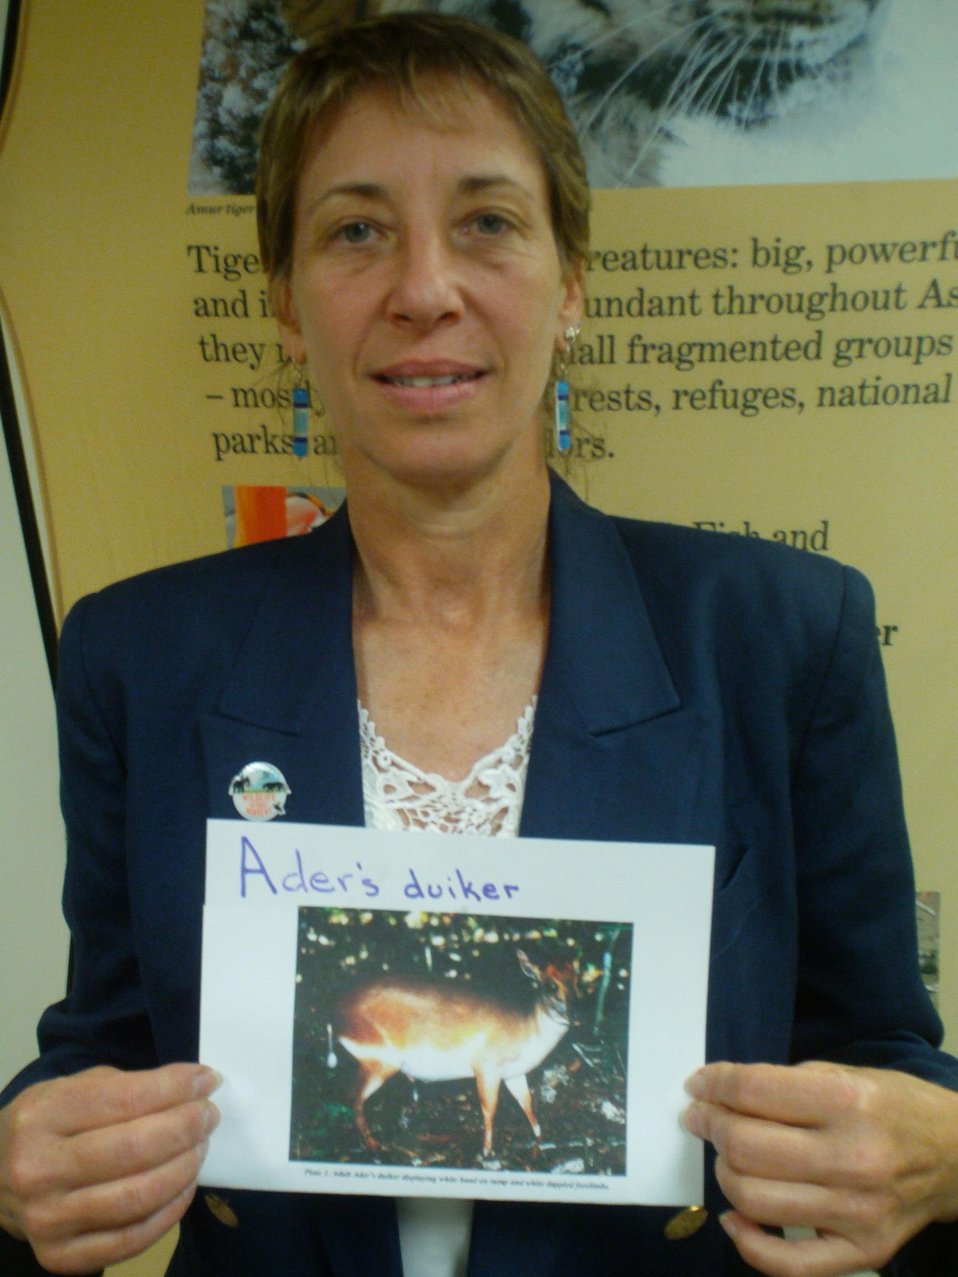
Cyndi Perry, 'Ader's Duiker,'

International Affairs participates in FFI's In Our Hands campaign